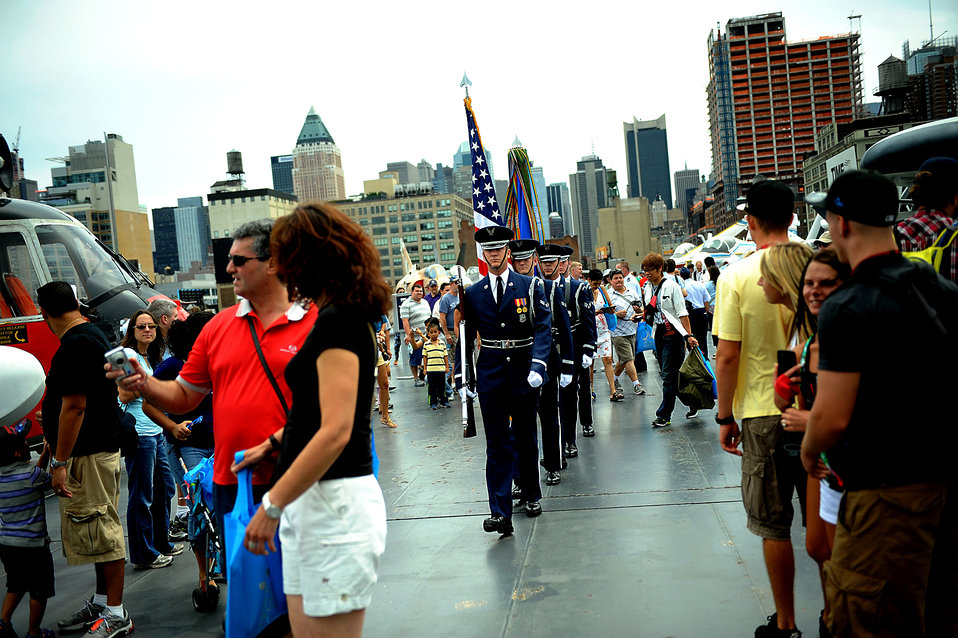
Opening ceremony

The U.S. Air Force Color Guard prepares to post colors for the opening ceremony of Air Force Week 2012 in New York City on Aug. 19.